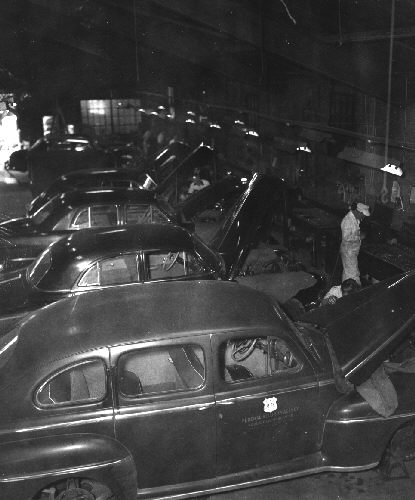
CDC Garage